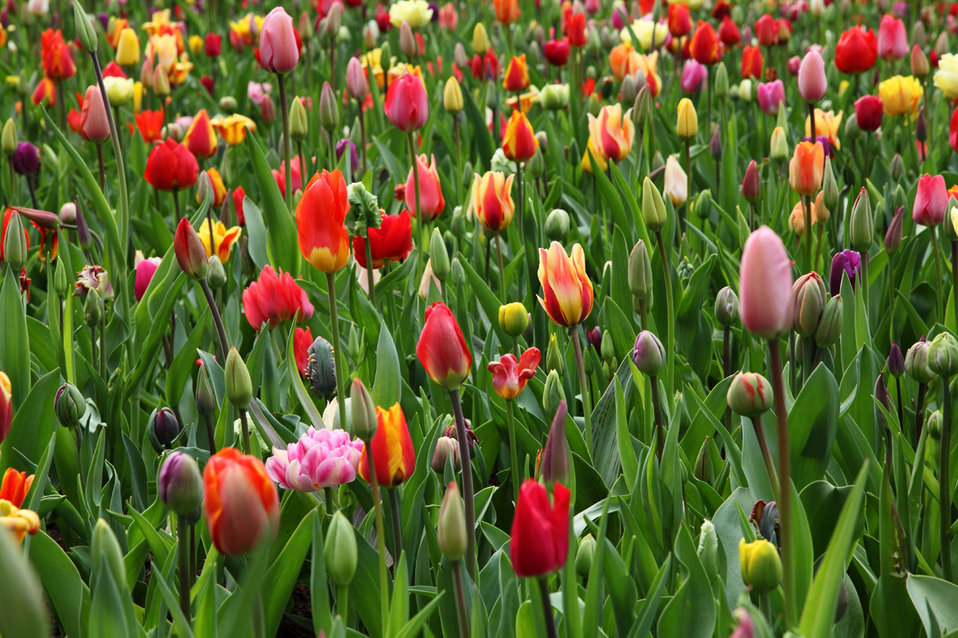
Colorful tulip background

Colorful flower background image.